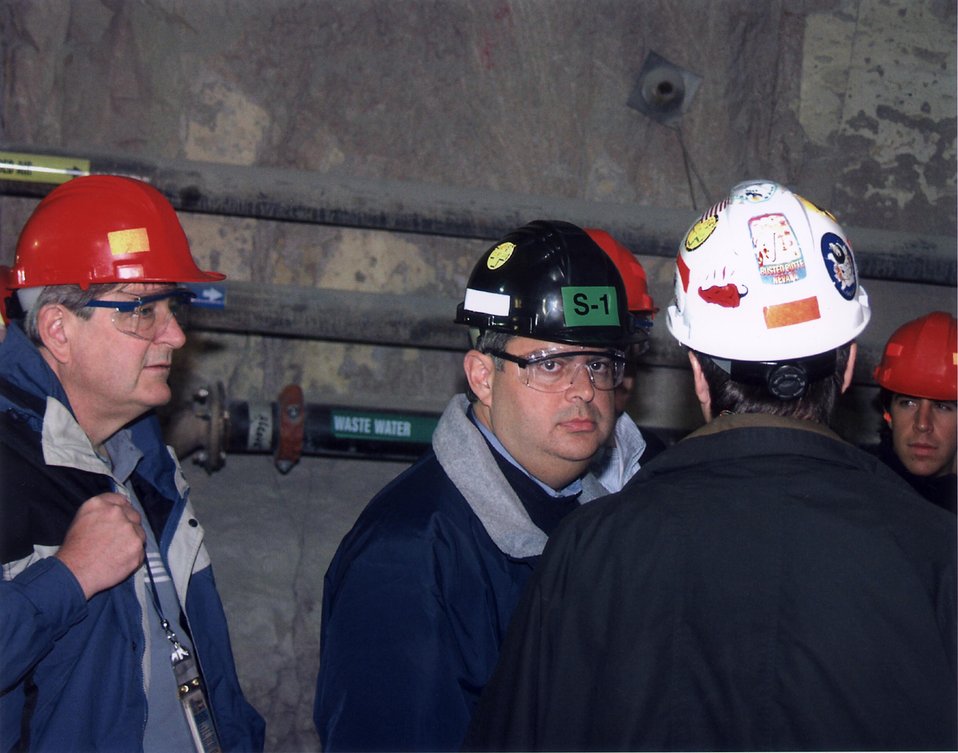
SECRETARY ABRAHAM INSIDE YUCCA MOUNTAIN'S EXPLORATORY STUDIES FACILITY (ESF).

YUCCA MOUNTAIN, ON THE SOUTHWEST BOUNDARY OF THE NEVADA TEST SITE, IS BEING EVALUATED FOR SUITABILITY AS THE NATION'S FIRST REPOSITORY FOR HIGH LEVEL NUCLEAR WASTE. STUDIES INCLUDE SURFACE BASED TESTING OF ROCK, SOIL SAMPLES AND WATER MOVEMENT, SUBSURFACE ROCK TESTING AT DEEP LEVELS AND LABORATORY ANALYSIS OF SAMPLES. CURRENTLY NUCLEAR WASTE IS STORED IN TEMPORARY SURFACE STORAGE FACILITIES IN 39 STATES.